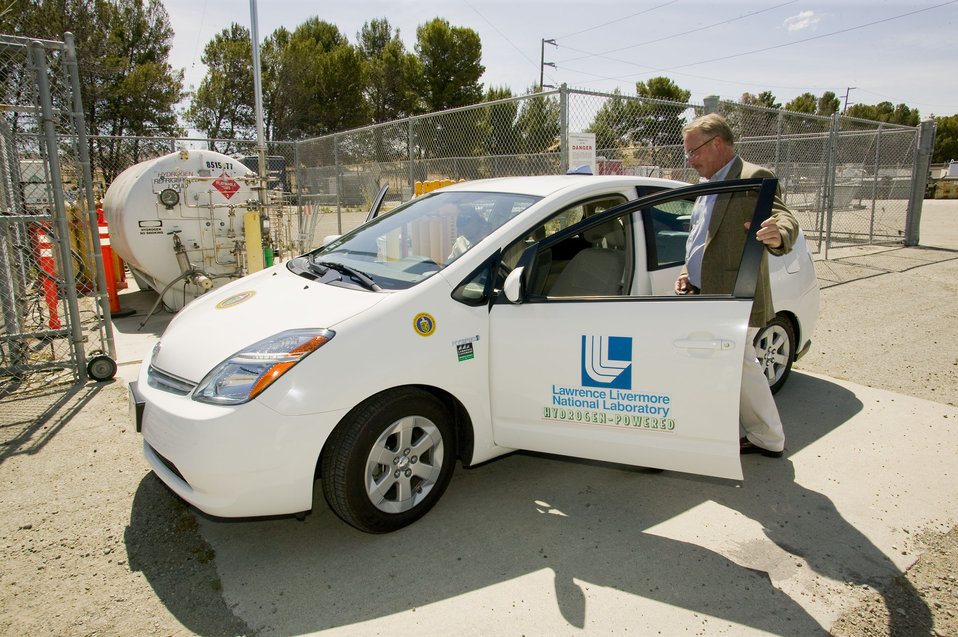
Tim Ross at LLNL's Hydrogen Refueling Station with a test vehicle equipped with an innovative hydrogen tank.

Laboratory research team can hold liquid hydrogen for six days without venting and of the fuel. As compared to today's liquid hydrogen tanks capable of holding hydrogen for merely two to four days. The LLNL experimental hybrid vehicle demonstrated the longest driving distance on a single tank of hydrogen (650 miles). The recent thermal endurance experiments validate the key benefit of cryogenic pressure vessels: They deliver the high density of liquid hydrogen storage without the evaporative losses. This research is part of DOE's National Hydrogen Storage Project to demonstrate advanced hydrogen-storage materials and designs.